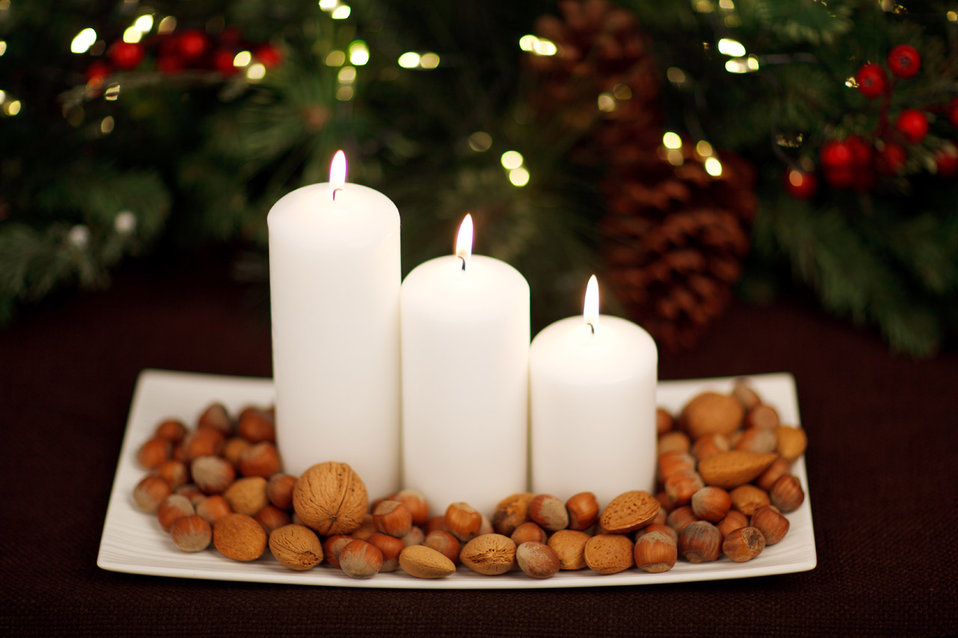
Candles and nuts at christmas

Candles and nuts on the plate at christmas time.